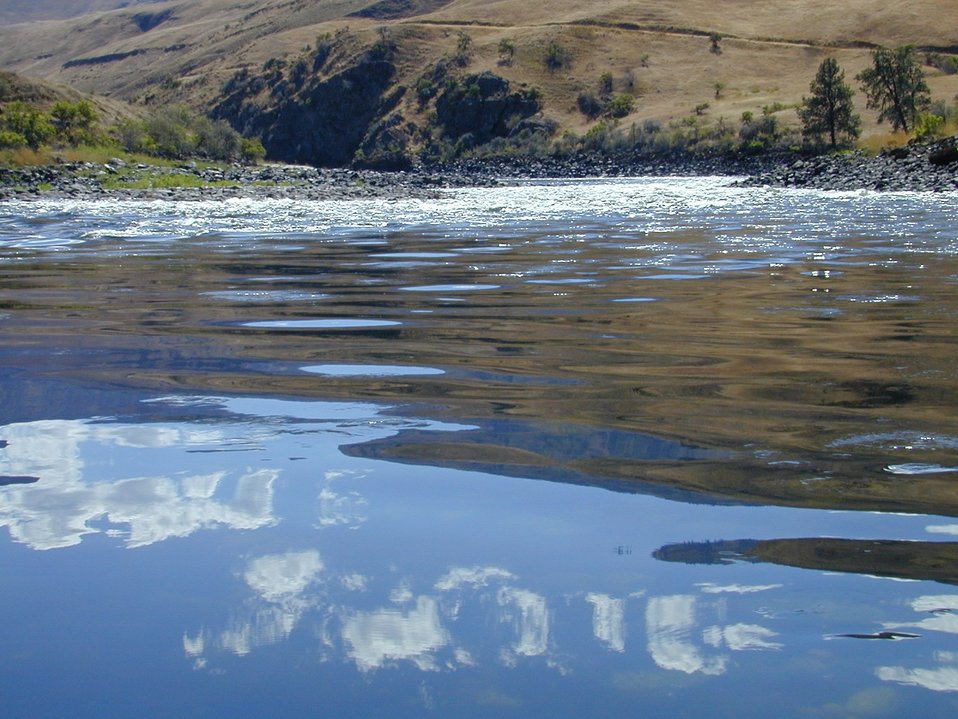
Scenic shot of Lower Salmon River Cottonwood Field Office UCSC Upper Columbia Salmon Clearwater District